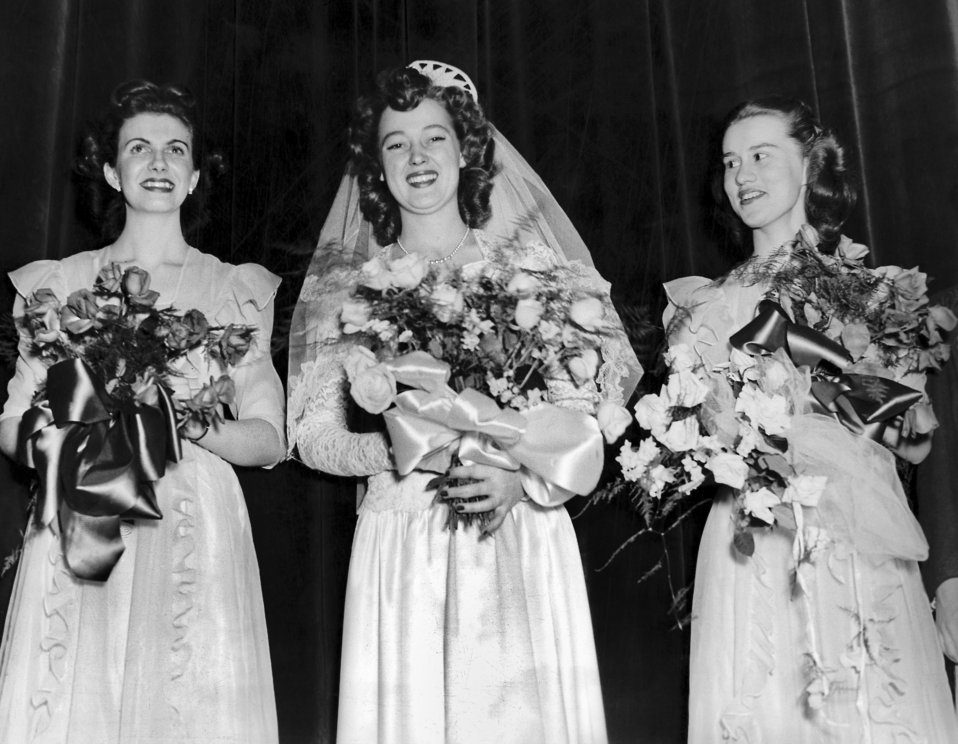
Wedding in Oak Ridge

1038-6 DOE photo by Ed Westcott Oak Ridge Tennessee